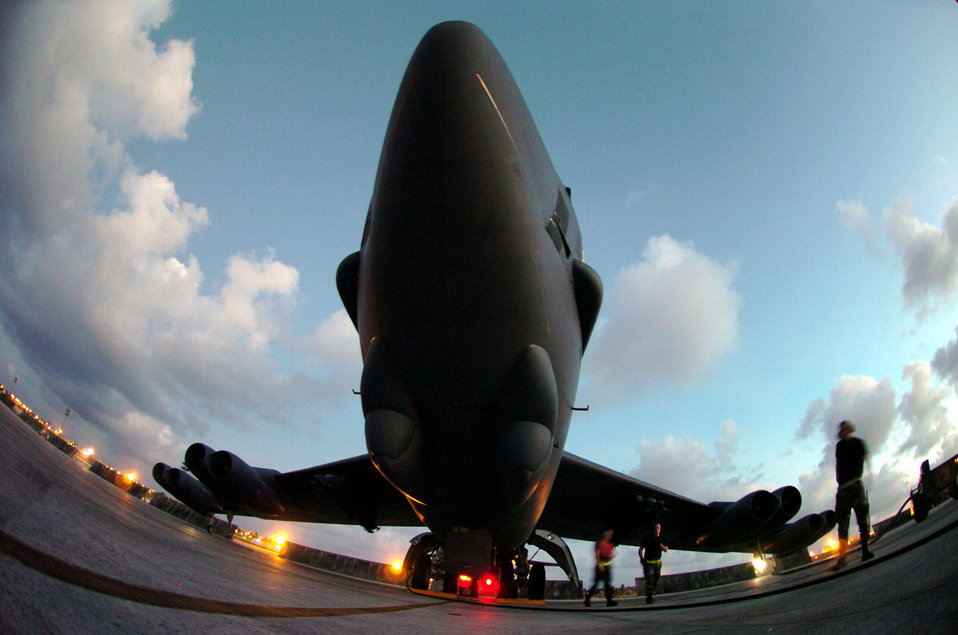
The Buff

ANDERSEN AIR FORCE BASE, Guam -- A B-52 Stratofortress bomber from the 5th Bomber Wing, Minot Air Force Base, N. D., sits on the flightline before night operations here. The 5th BW is the first to deploy to the island since U.S. Pacific Command officials decided to station a bomber force here. Officials said the continuous bomber presence is aimed at enhancing regional security, demonstrating United States' commitment to the Western Pacific and providing training opportunities that integrate bombers into joint and coalition forces in the Pacific.